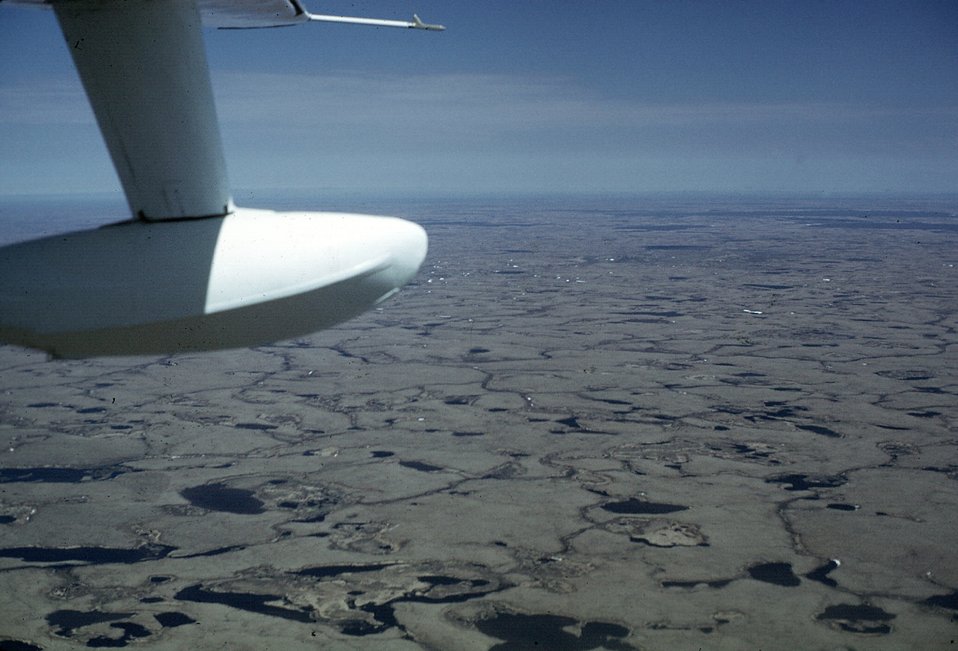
Aerial view of Delta Flats area, Clarence Rhode NWR, Sewad Peninsula